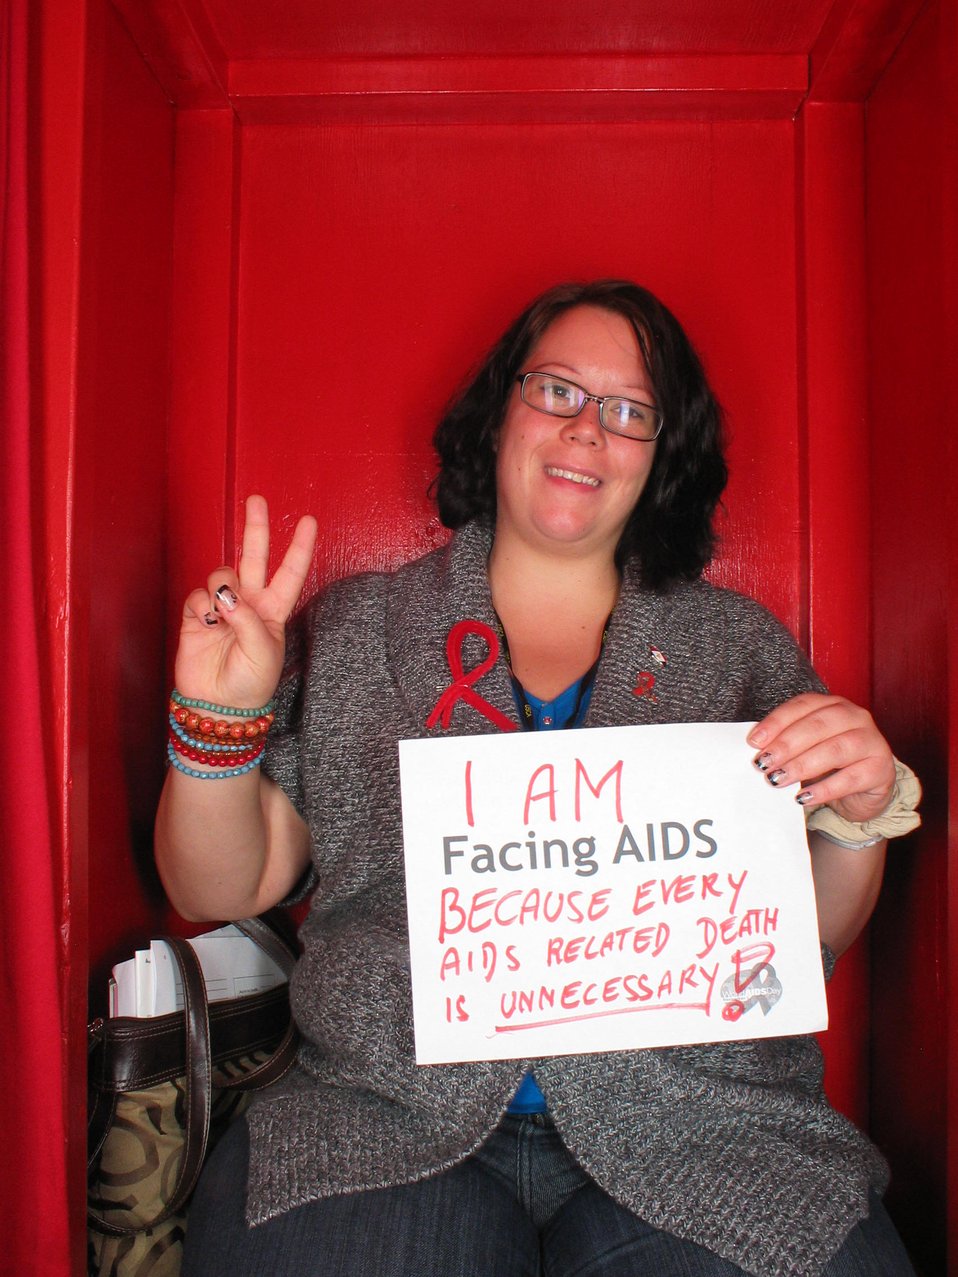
I am Facing AIDS because every AIDS related death is unnecessary!